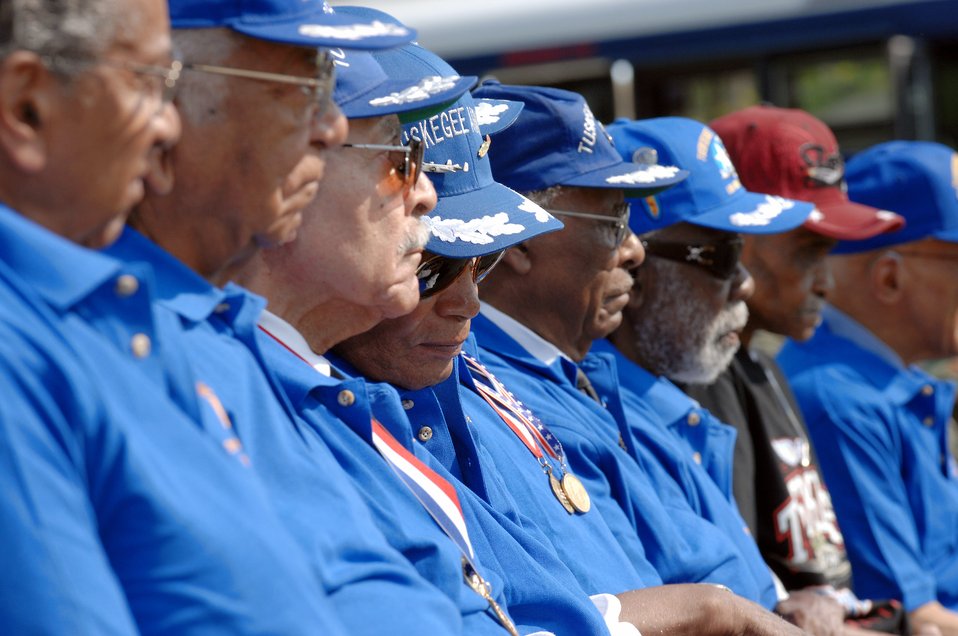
Tuskegee Airmen 37th National Convention

Original members of the Tuskegee Airmen look on during the rededication ceremony of Tuskegee Airman Avenue at McGuire Air Force Base, NJ on July 17th, during the 37th annual Tuskegee Airmen National Convention in Philadelphia, PA. The Tuskegee Airmen are recognized for their significant contributions to the various military operations of World War II in the face of racial hostility. They flew combat missions as bomber escorts and laid the foundation for racial diversity in the U.S. military and government, earning the prestigious Congressional Gold Medal. Military members from each branch of service attend this conference to learn more about the Tuskegee Airmen and to attend leadership forums conducted by senior leadership panels.